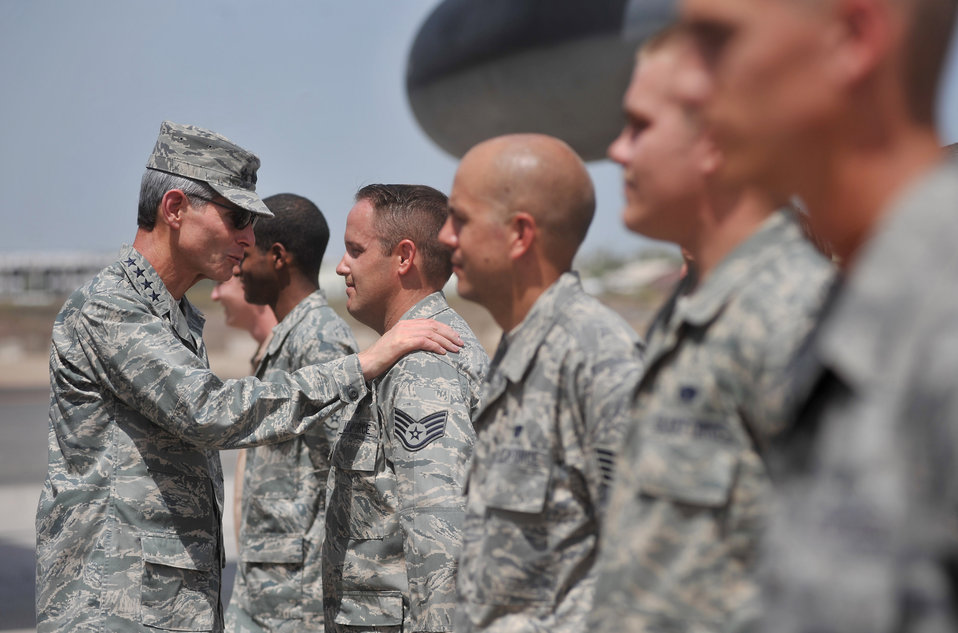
Chief of staff wraps up Middle East tour at Joint Base Balad

Air Force Chief of Staff Gen. Norton Schwartz speaks with Staff Sgt. Adam Moody at Camp Lemonier, Djibouti, Oct. 23. The visit marked General Schwartz's first trip to the Horn of Africa since his appointment as the Air Force chief of staff. Sergeant Moody is assigned to the 81st Expeditionary Rescue Squadron, Combined Joint Task Force-Horn of Africa.